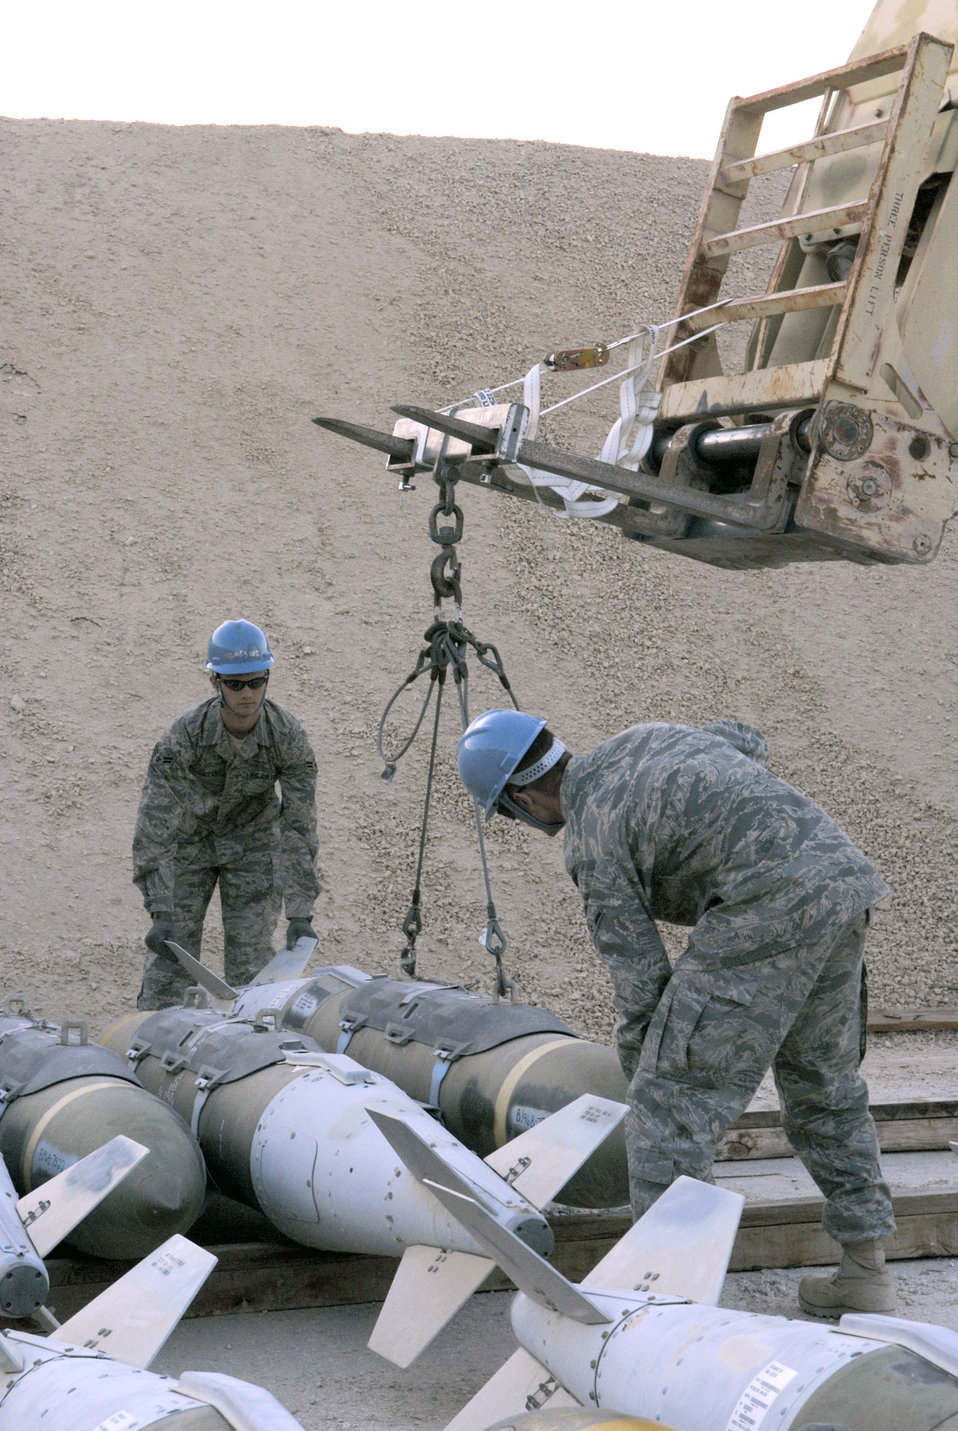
Heavy metal

Airman 1st Class Brian Foster and Airman Bryan Newcomer move guided bomb unit-31s during the annual munitions serviceability inspection Feb. 3 at an air base in Southwest Asia. Airman Foster is a 379th Expeditionary Maintenance Squadron ammunitions systems journeymen from Ellijay, Ga., and Airman Newcomer is a 379th EMXS ammunitions systems apprentice and hails from Suwanee, Ga. Both are deployed from Dyess Air Force Base, Texas.